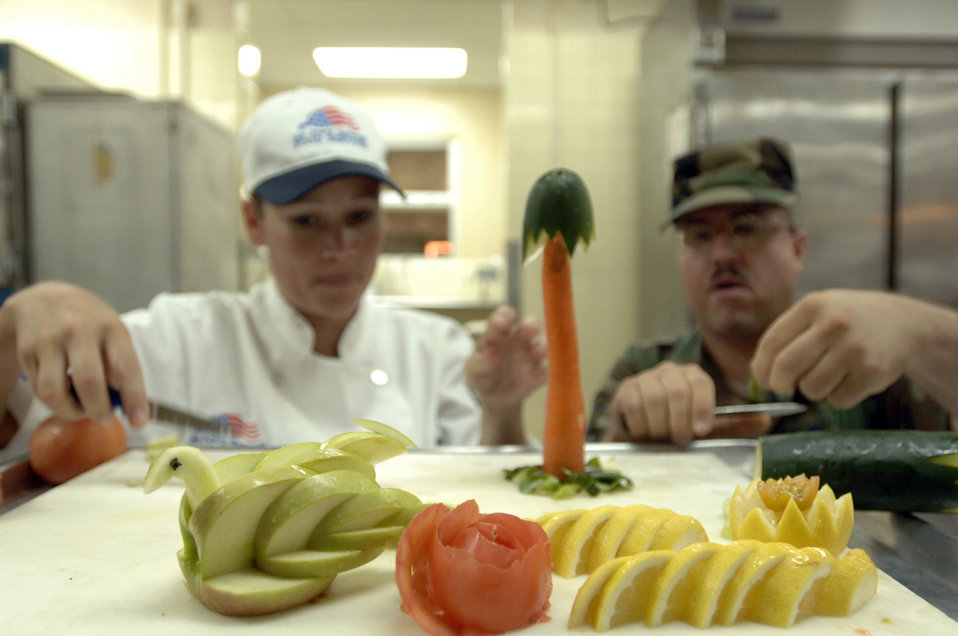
Happy Thanksgiving

ANDERSEN AIR FORCE BASE, Guam (AFPN) -- Staff Sgt. Tina Ross (left) and Master Sgt. Ralph Neri prepare vegetables for Thanksgiving festivities here. Both Airmen are assigned to the 36th Services Squadron.